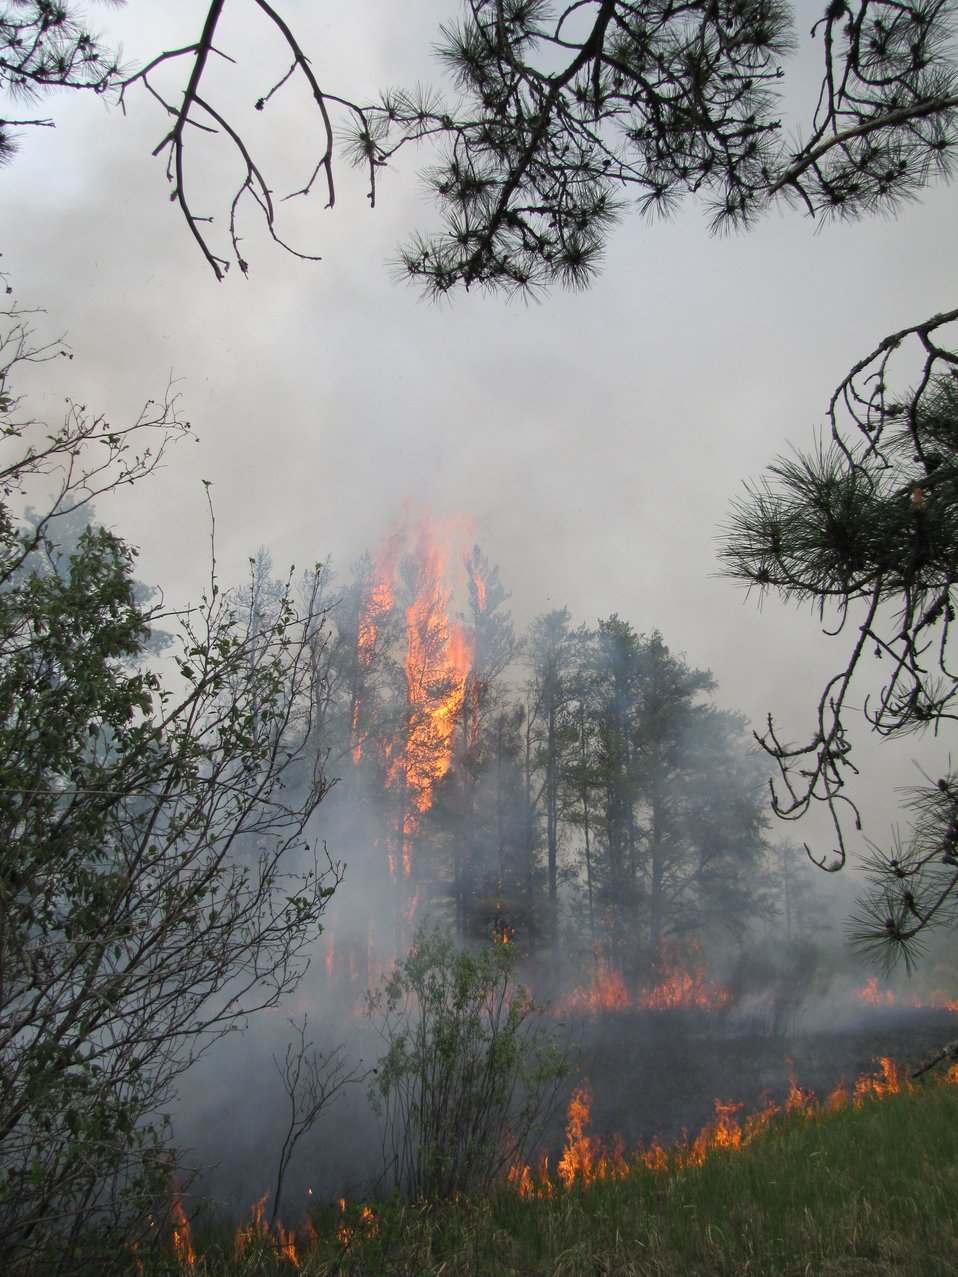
Tree on Fire

Lighting a back fire off Pine Creek Road to keep the main fire contained.